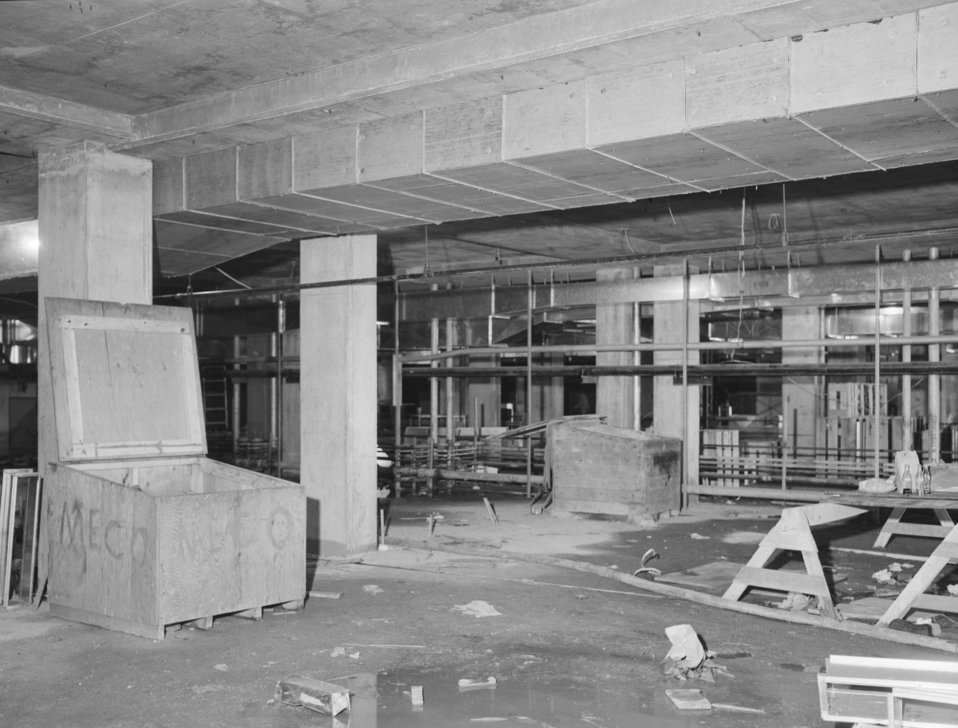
CDC Clifton Road campus under construction in 1959; this was the interior of a lab in Building 1.